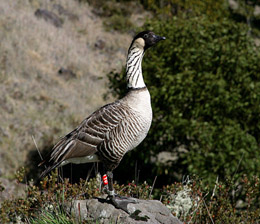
Nene - Hakalau Forest NWR

The State Bird of Hawaii, the Nene is normally seen in the upper elevation grasslands where it feeds on grasses, seeds and berries.